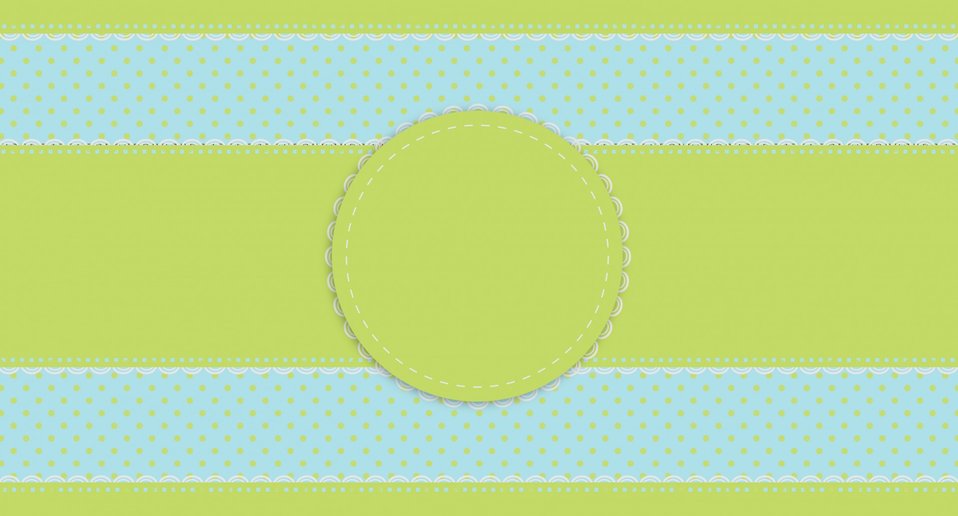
Lace polka dots border

Fancy lace polka dots border trim in blue and green spots, dots.